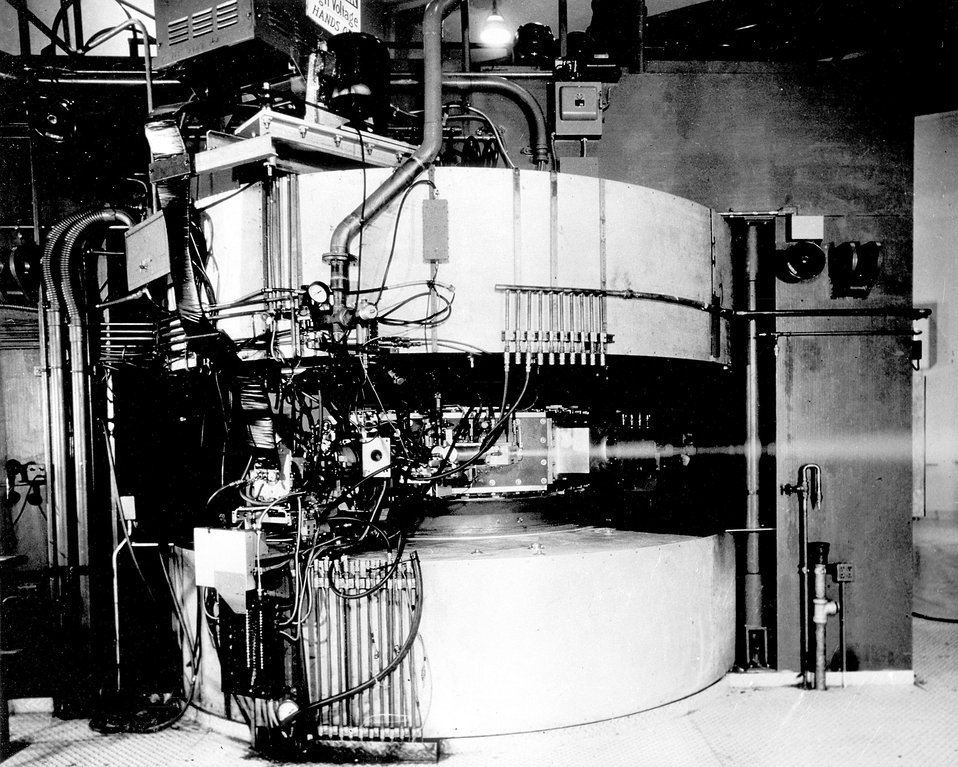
Beam of deutrons emerging from the acceleration chamber of Argonne's new 60'cyclotron.
c.1957